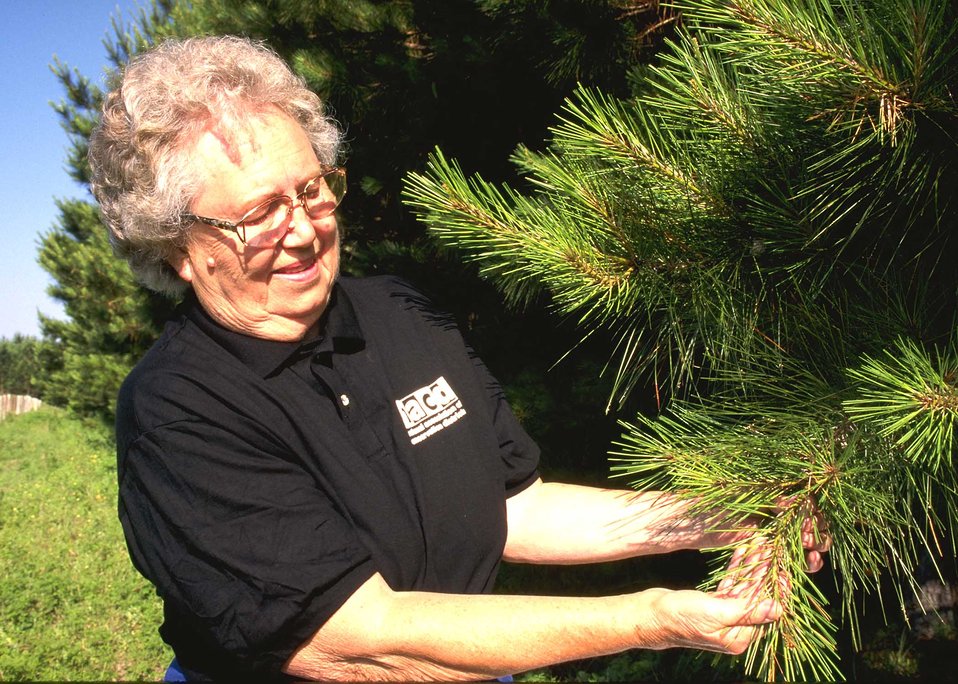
Landowner checks the health of a stand of evergreens on her farm in Monticello, FL. Landowner is the Supervisor/Sec/Treas. of the Jefferson Soil and Water Conservation District, as well as the Vice President of the Florida Association of Conservation Districts, Area 2.